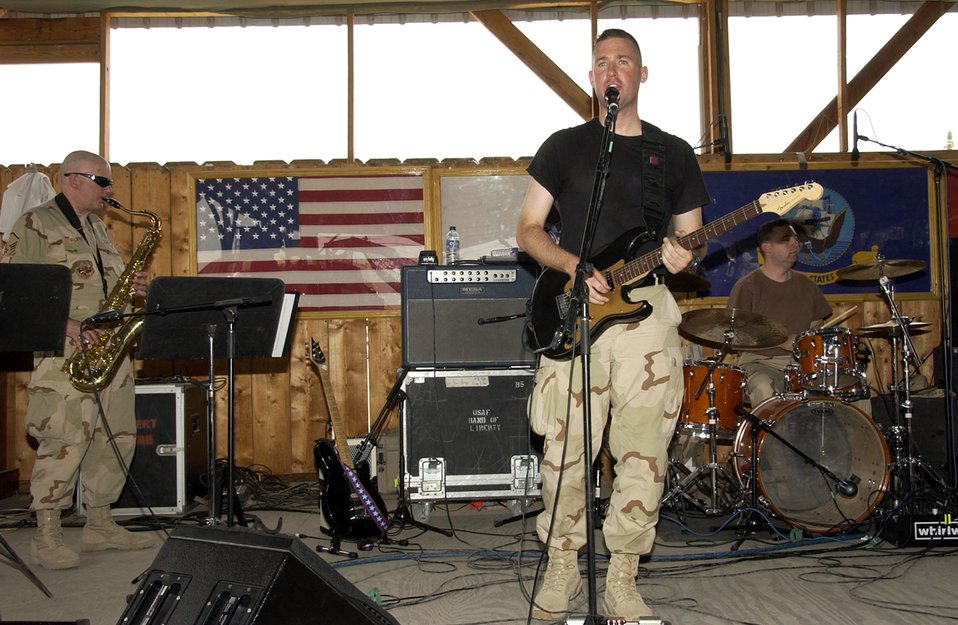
Band Brothers: Family of musicians rock AOR

The Filipek family rocks out during a rehearsal when the Central Air Forces band,